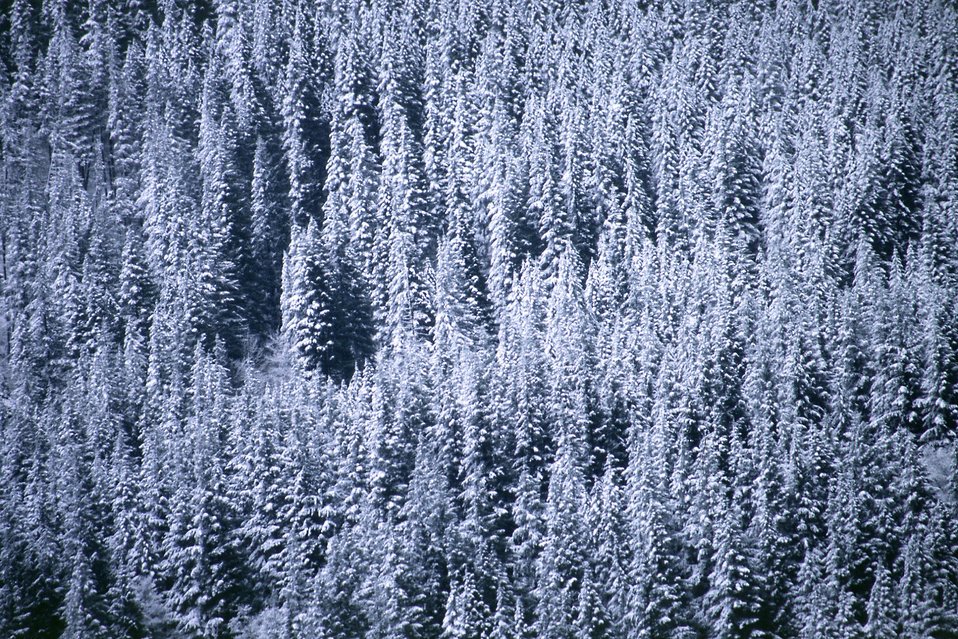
Mid Winter forest scene in the Mollala Corridor.